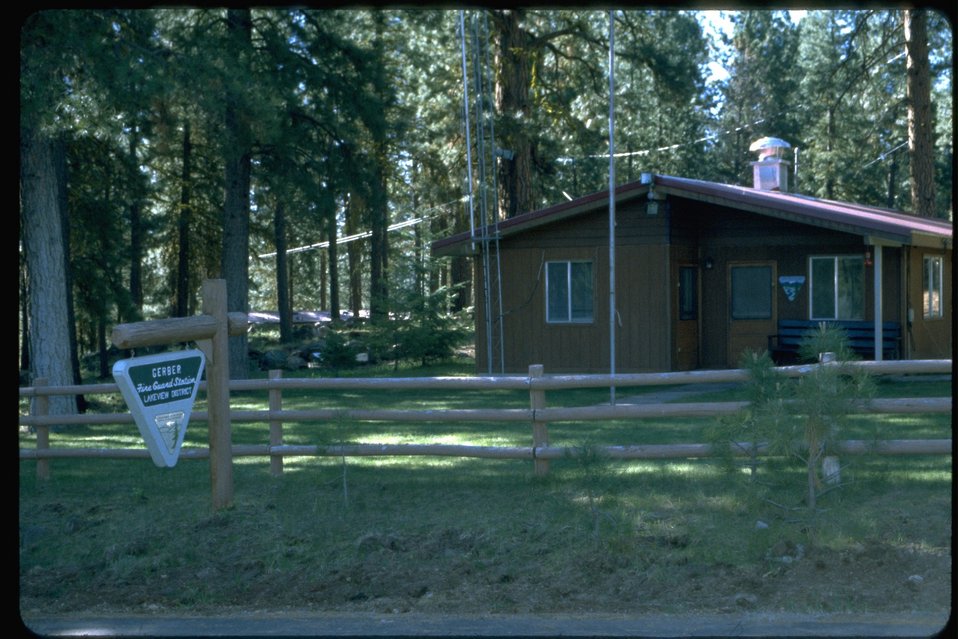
Medium shot of Gerber Fire Guard Station.